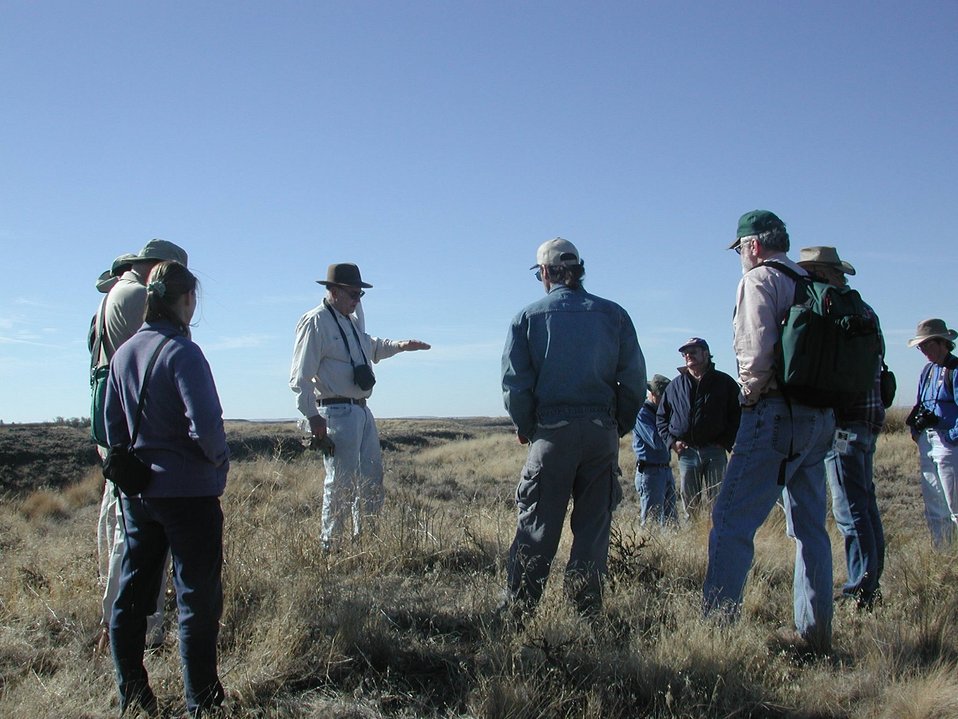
Andrew Berg talks with the Pulblic Lands Day tour group about a seismic hypothisis for the numerous mima mounds in the area.